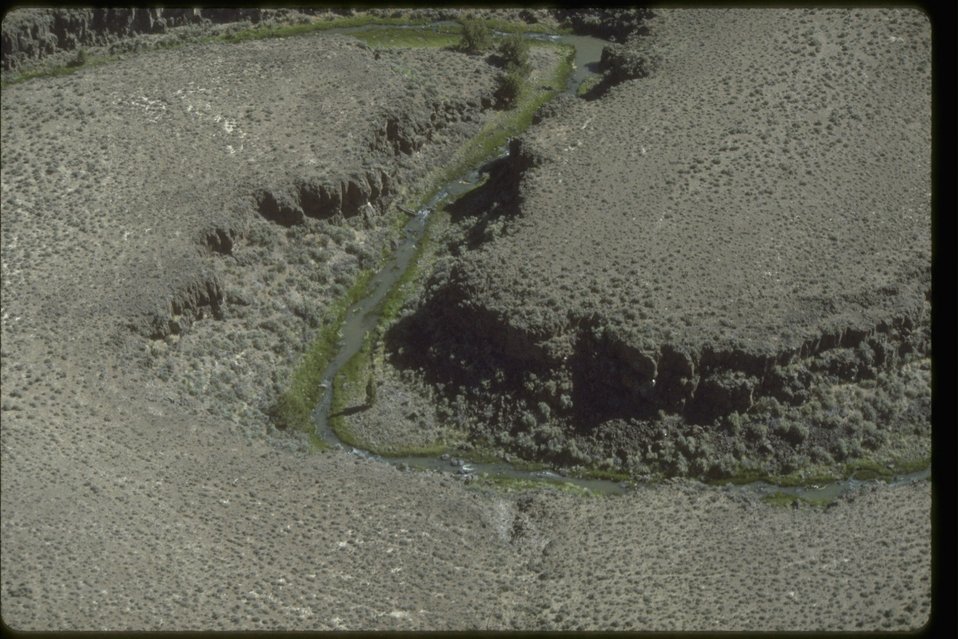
Aerial picture of Guano Creek Wilderness Study Area. OR 1-132